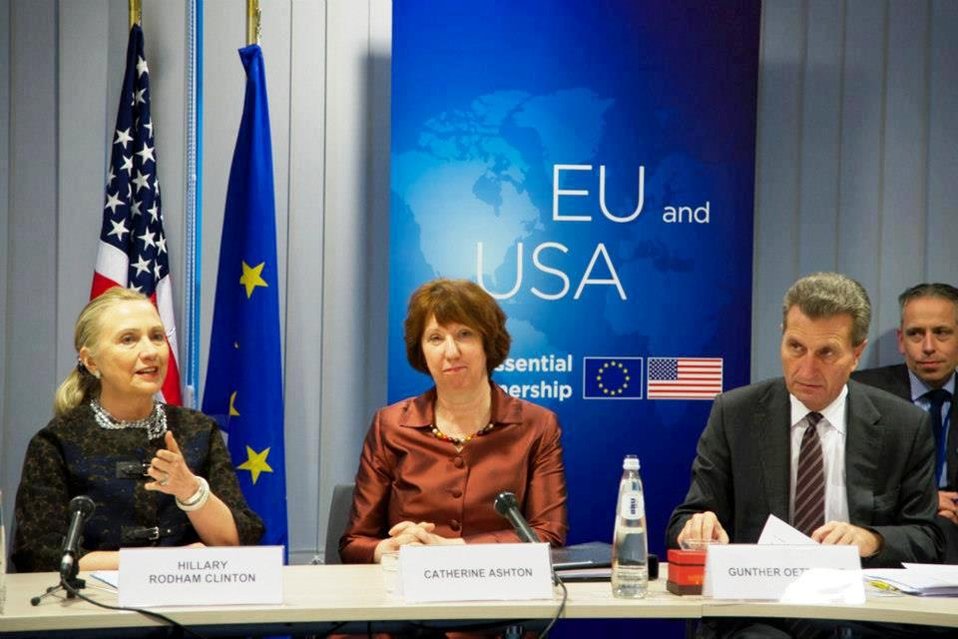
Secretary Clinton Participates in the U.S.-EU Energy Council Meeting

U.S. Secretary of State Hillary Rodham Clinton participates in the U.S.-EU Energy Council meeting in Brussels, Belgium, December 5, 2012. Also pictured in the photo are EU High Representative Catherine Ashton, center, and EU Energy Commissioner Günther Oettinger, right.